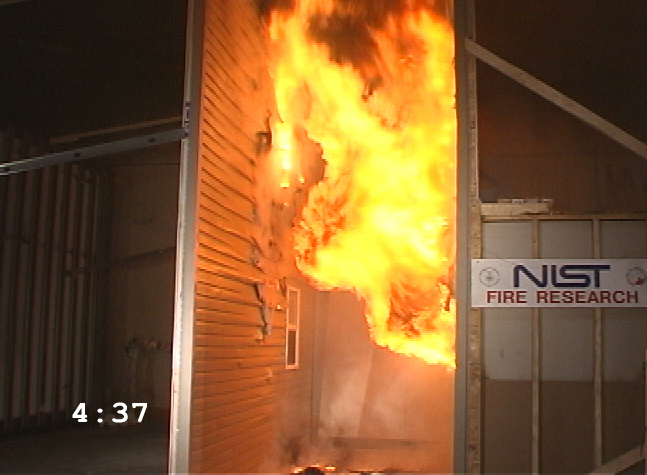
Fire Research; Fire Tests; House Spacing

In a recent NIST lab test, flames from a simulated house with combustible exterior walls ignite a similar 'house' six feet away. The numbers in the corner are the time (in minutes) since the start of the test.